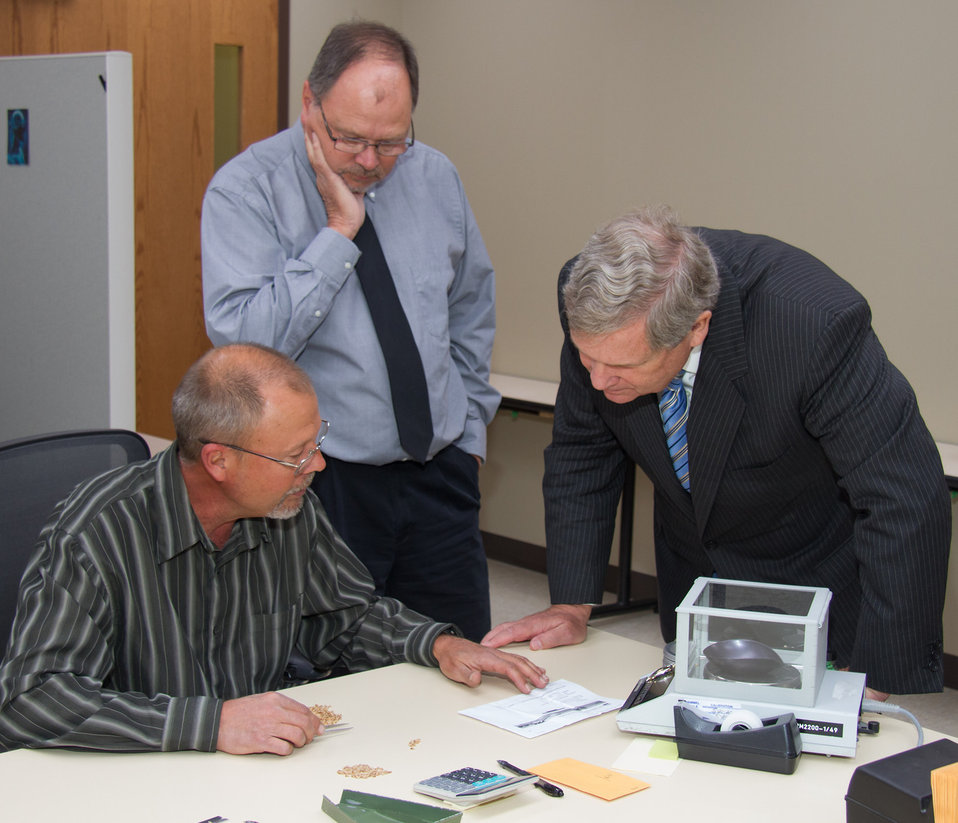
James Whalen, Chair of Grain Inspection, Packers and Stockyards Administration (GIPSA), Board of Appeals and Review, (l) watches as Mark Ruth, senior member of the Board of Appeals and Review (BAR) explains how to grade a sample of wheat to maintain the BAR's pivotal role in maintaining the accuracy and consistency of grain quality assessments in the U.S. grain industry to Agriculture Secretary Tom Vilsack (r) in Kansas City, MO, on Wednesday, Oct. 23, 2013.